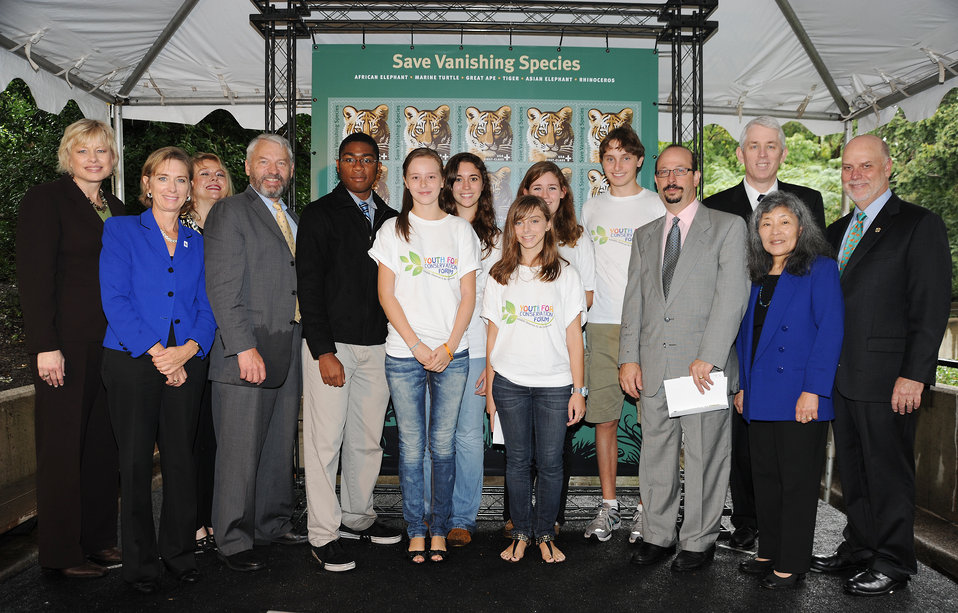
Program Speakers with Youth Conservation Corps Lavonda Walton FWS